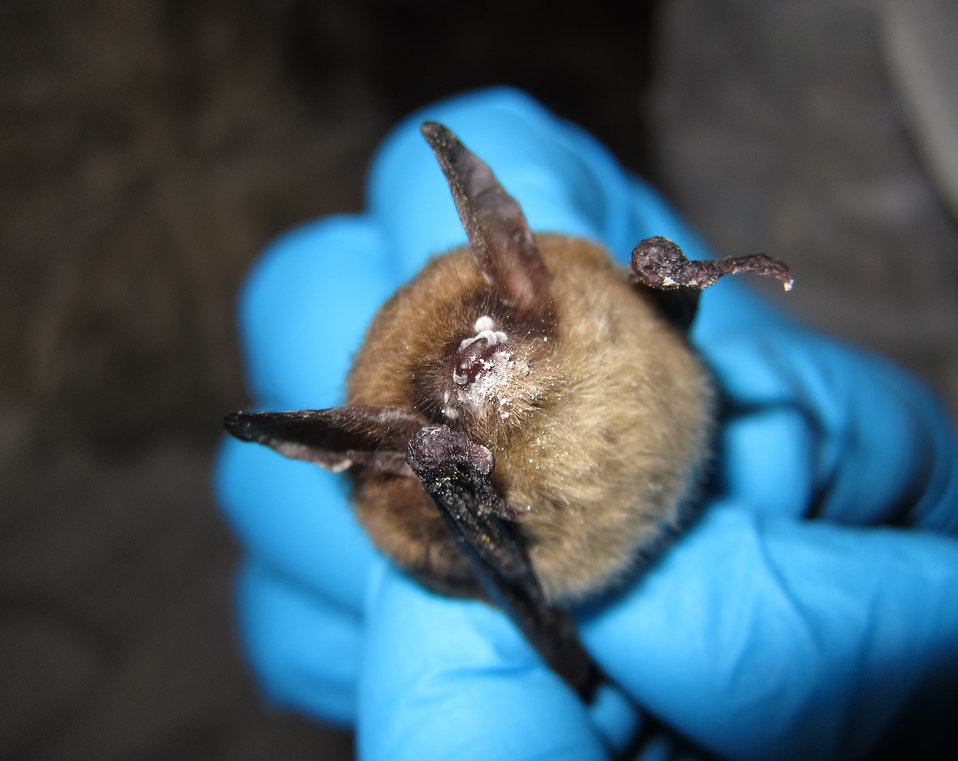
Northern long-eared bat with visible symptoms of WNS

Myotis septentrionalis, northern myotis (Vespertilionidae) with growth of Geomyces destructans clearly evident. LaSalle County, Illinois. January 2013